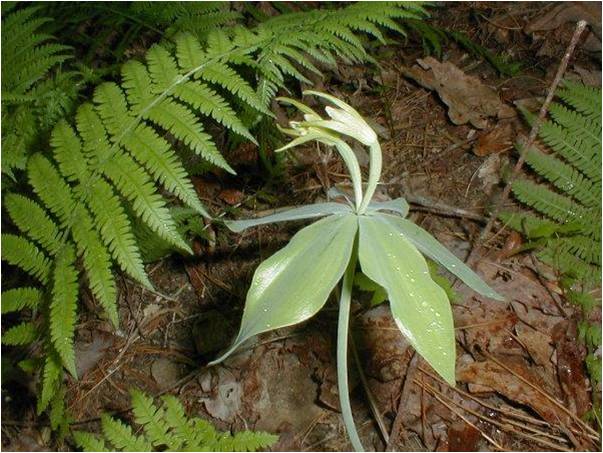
Small-whorled pogonia